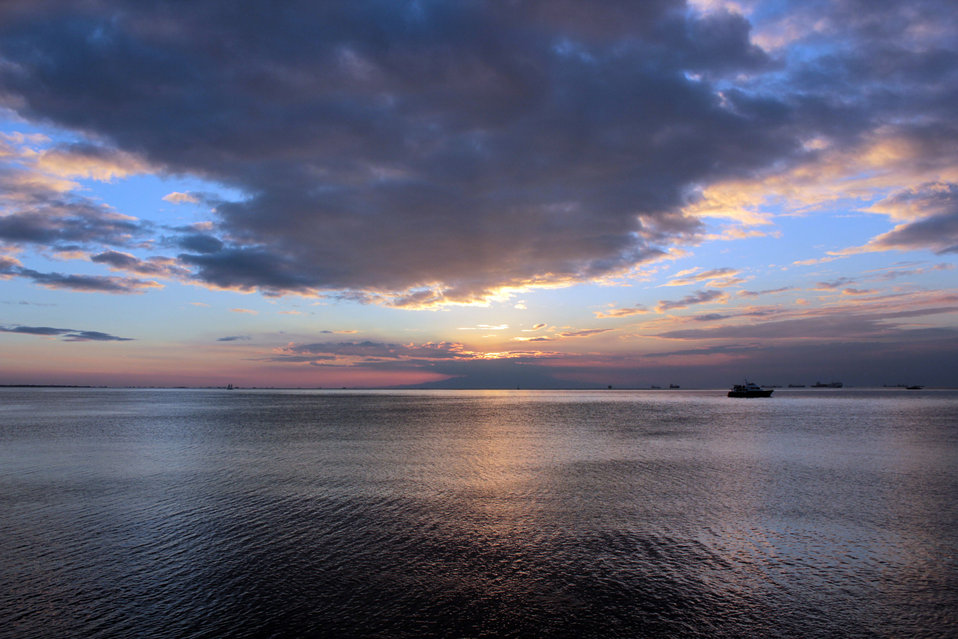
Sunset in manila bay.